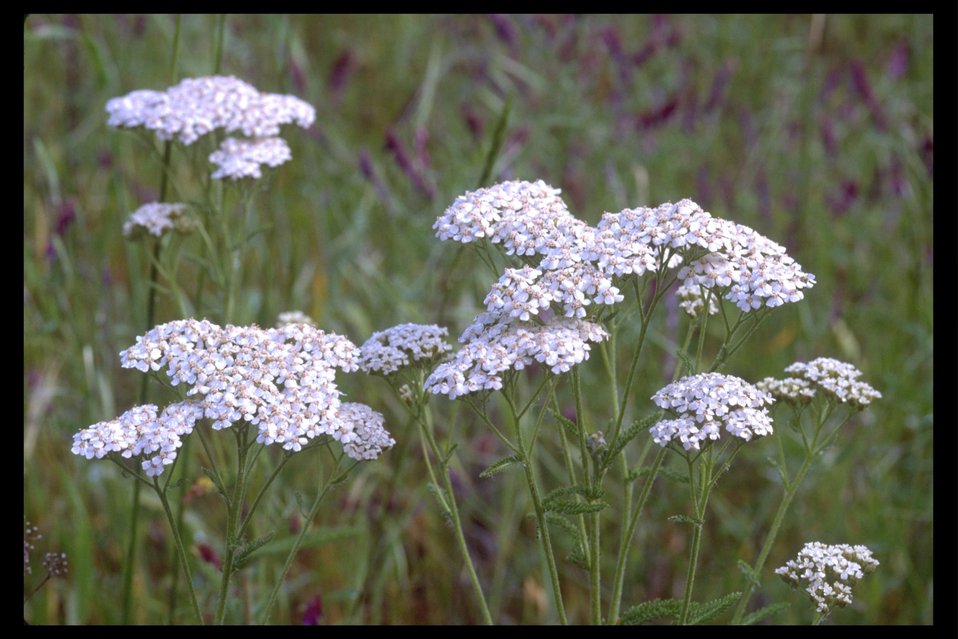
Common Yarrow (Achillea millefolium) found at Lower Table Rock.